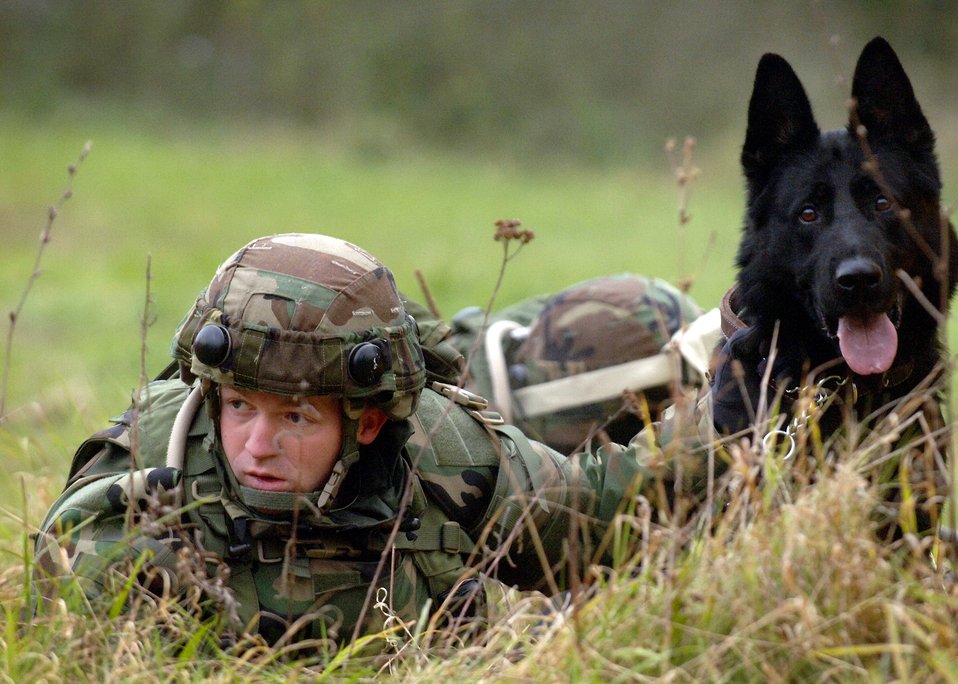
Creek Defender

Staff Sgt. Jonathan Beaver and his partner Brutus, a 4-year-old German Shepherd, react to